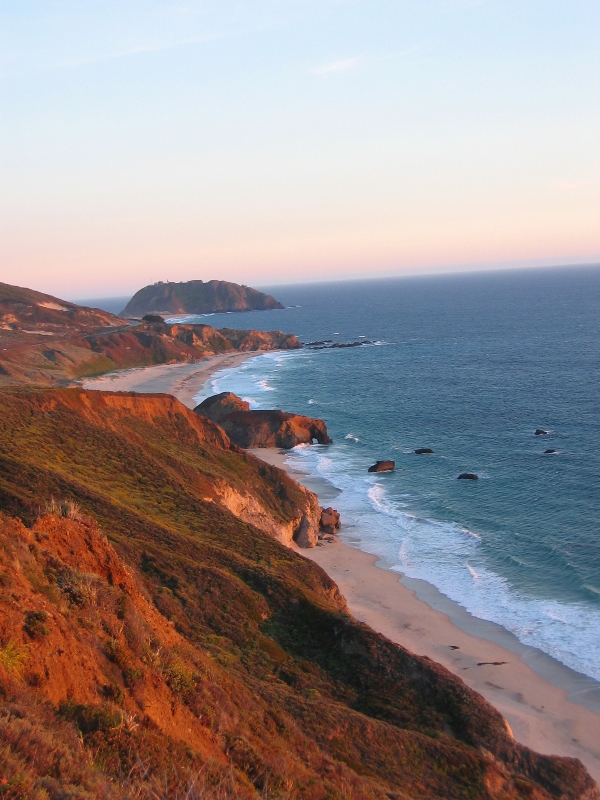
Uploaded by request of Erin Henderlight.

Photo taken on the California coast near Big Sur.

This picture was taken late one afternoon as a friend and I were driving back to San Francisco along the Pacific Coast highway. We'd been down in Southern California to see some baseball games and friends, and we stopped just in time to capture this sunset shot.